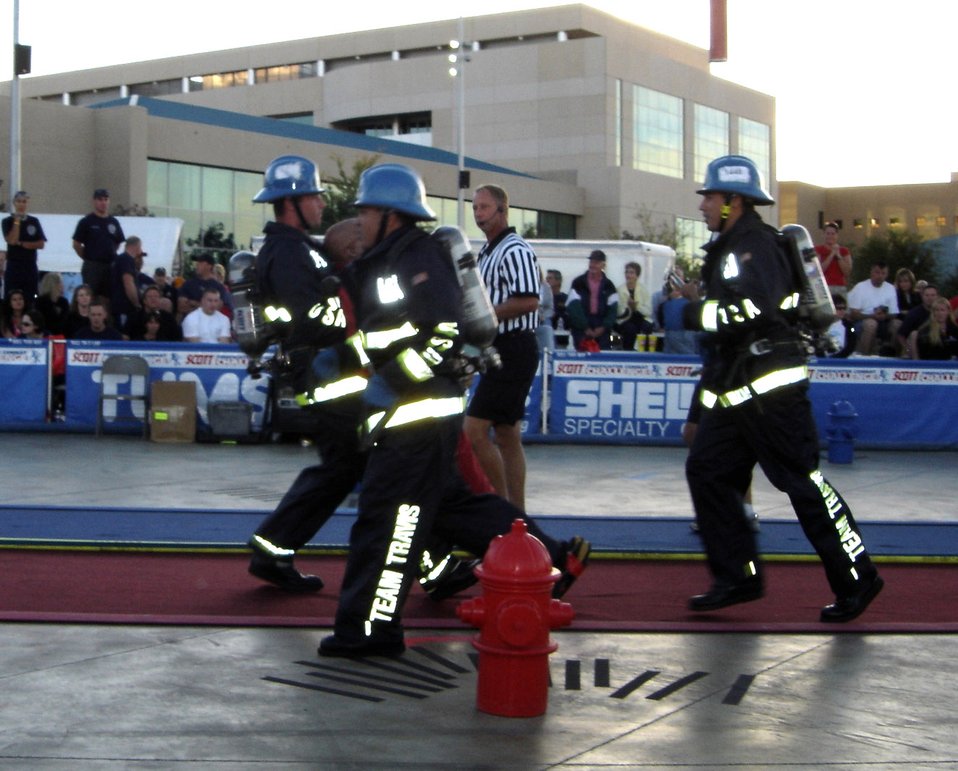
Travis firefighters crowned world champs for third straight year

Members of the Team Travis Firefighter Combat Challenge Team race against the clock during the